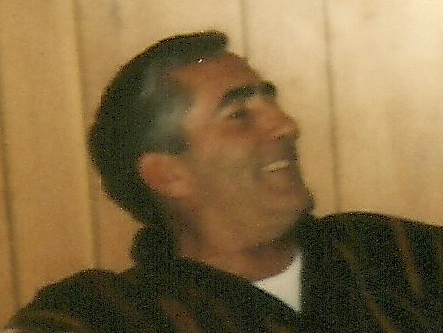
Part of personal photo collection of George Tsakopoulos